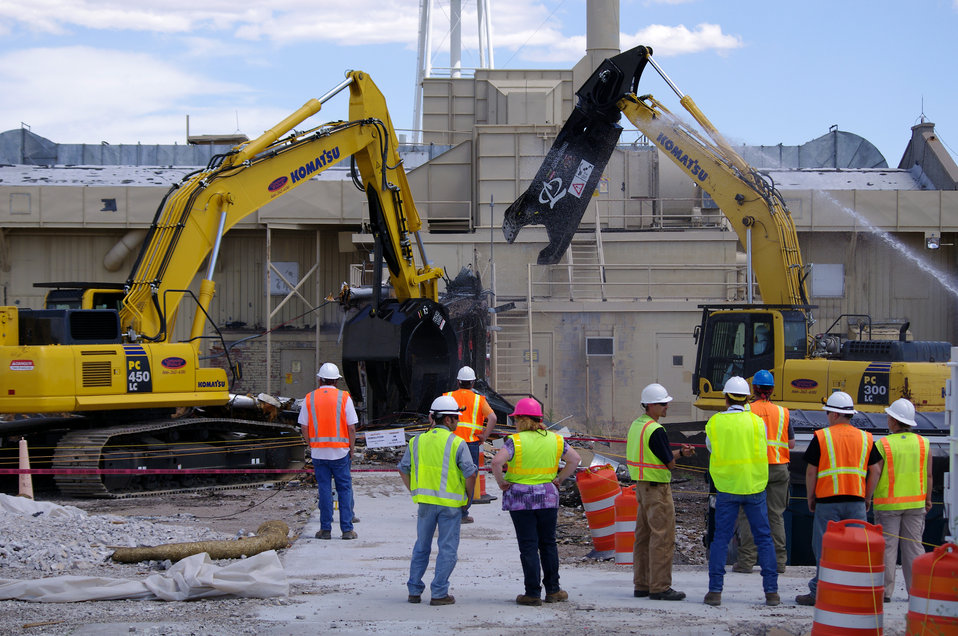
LANL Recovery Act Project Hits Hiring Peak, Exceeds Job Goals

LANL safety and operations crews observe the demolition of the world’s first full-scale plutonium processing lab. Known as “DP West,” the facility operated from late 1945 to 1978.

The Lab received $212 million in Recovery Act funds to decontaminate and decommission 21 old buildings at Technical Area 21 (TA-21), install 16 groundwater monitoring wells, and excavate the Lab’s oldest waste disposal site, Material Disposal Area B (MDA-B).